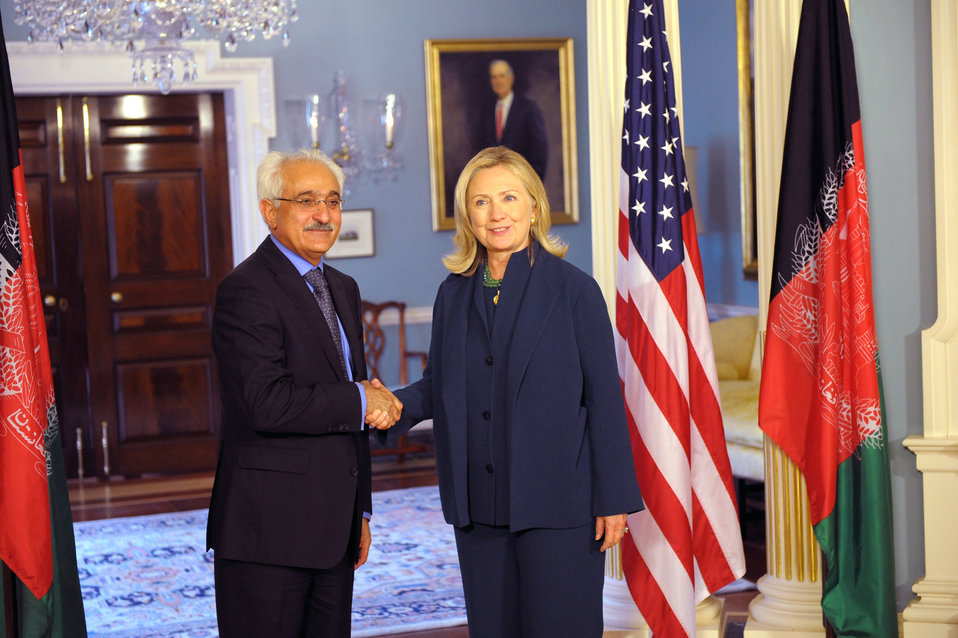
Secretary Clinton Meets With Afghan National Security Advisor Rangin Dadfar Spanta

U.S. Secretary of State Hillary Rodham Clinton meets with Afghan National Security Advisor Rangin Dadfar Spanta at the U.S. Department of State in Washington, D.C., on September 8, 2011.